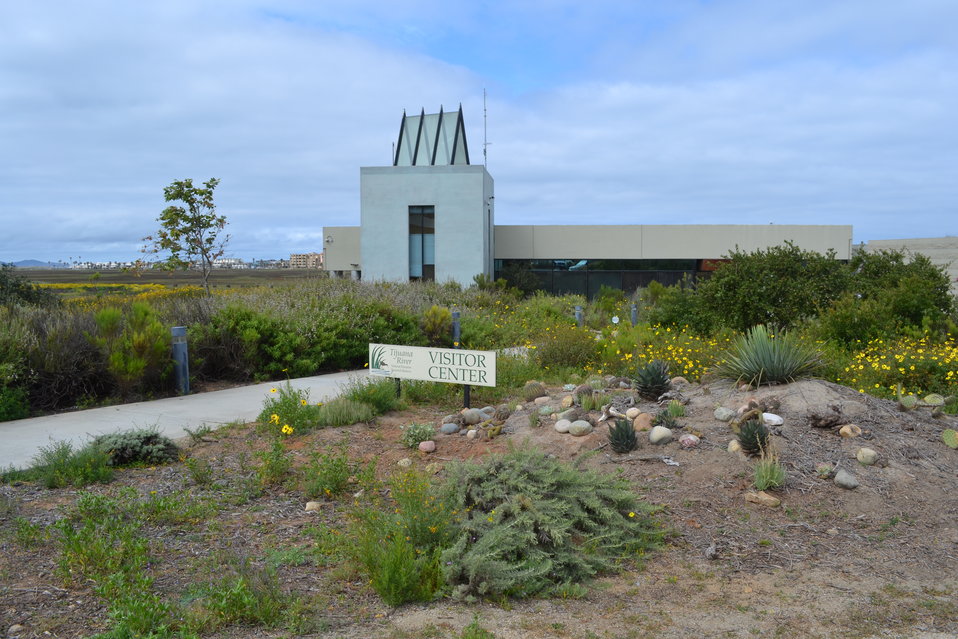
Tijuana Slough NWR & National Estuarine Research Reserve Visitor Center

Directions to Tijuana Estuary Visitor Center

301 Caspian Way
Imperial Beach, CA 91932

From North: Take I-5 South to Imperial Beach, take exit 4 – Coronado Avenue (not Coronado Bridge), turn right, continue straight on approximately 2.5 miles. (Around 13th street, Coronado Avenue will turn into Imperial Beach Blvd; continue straight on).
*** Turn left on 3rd Street at the stop sign, then left on Caspian Way which leads into parking lot. (parking is free)

From South: Take I-5 North to Imperial Beach, take exit 4 – Coronado Avenue, turn left. Continue straight on approximately 2.5 miles. (Around 13th street, Coronado Avenue will turn into Imperial Beach Blvd; continue straight on).***Follow above directions.

From Coronado: Take 75 South. Turn right on Rainbow Drive. Turn right onto Palm Avenue. ***Follow above directions.

From Palm Avenue trolley station: Take bus #933 to 3rd Street and Imperial Beach Blvd. ***Follow above directions.

From Iris Avenue trolley station: Take bus #934 to 3rd Street and Imperial Beach Blvd. ***Follow above directions.

Or visit our website: www.trnerr.org